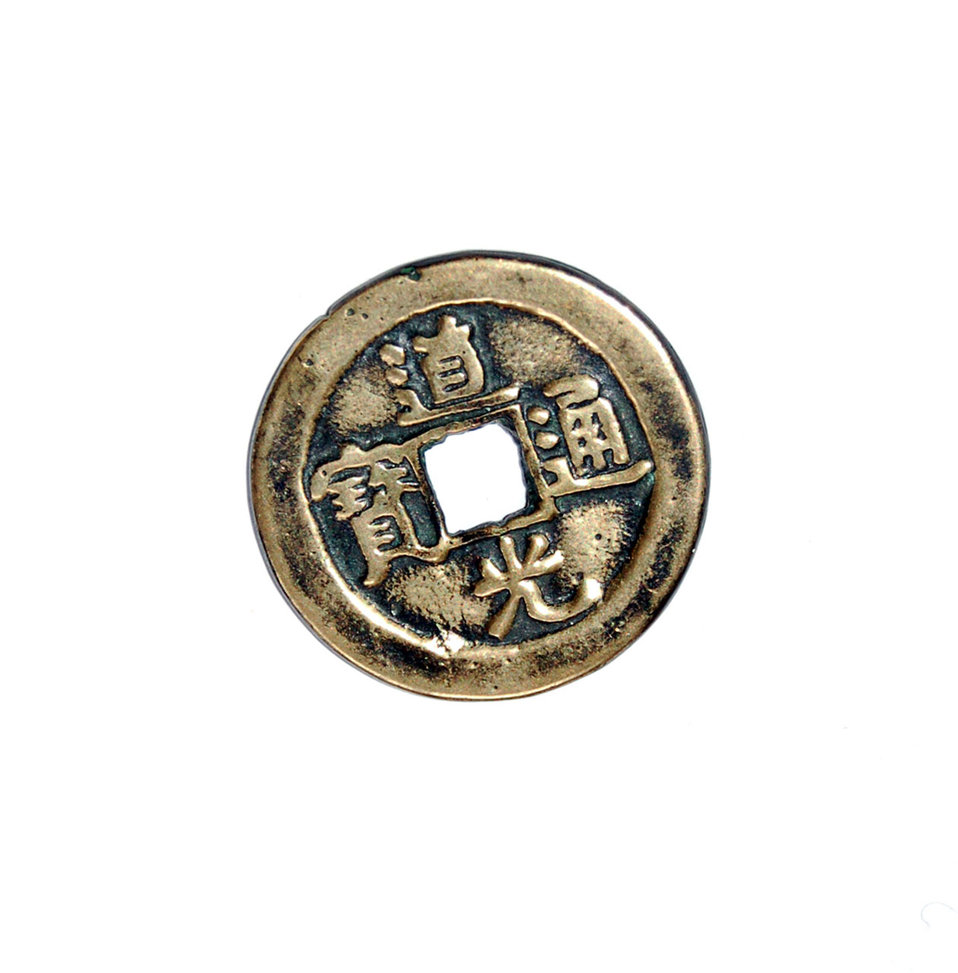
Chinese coin on white background.